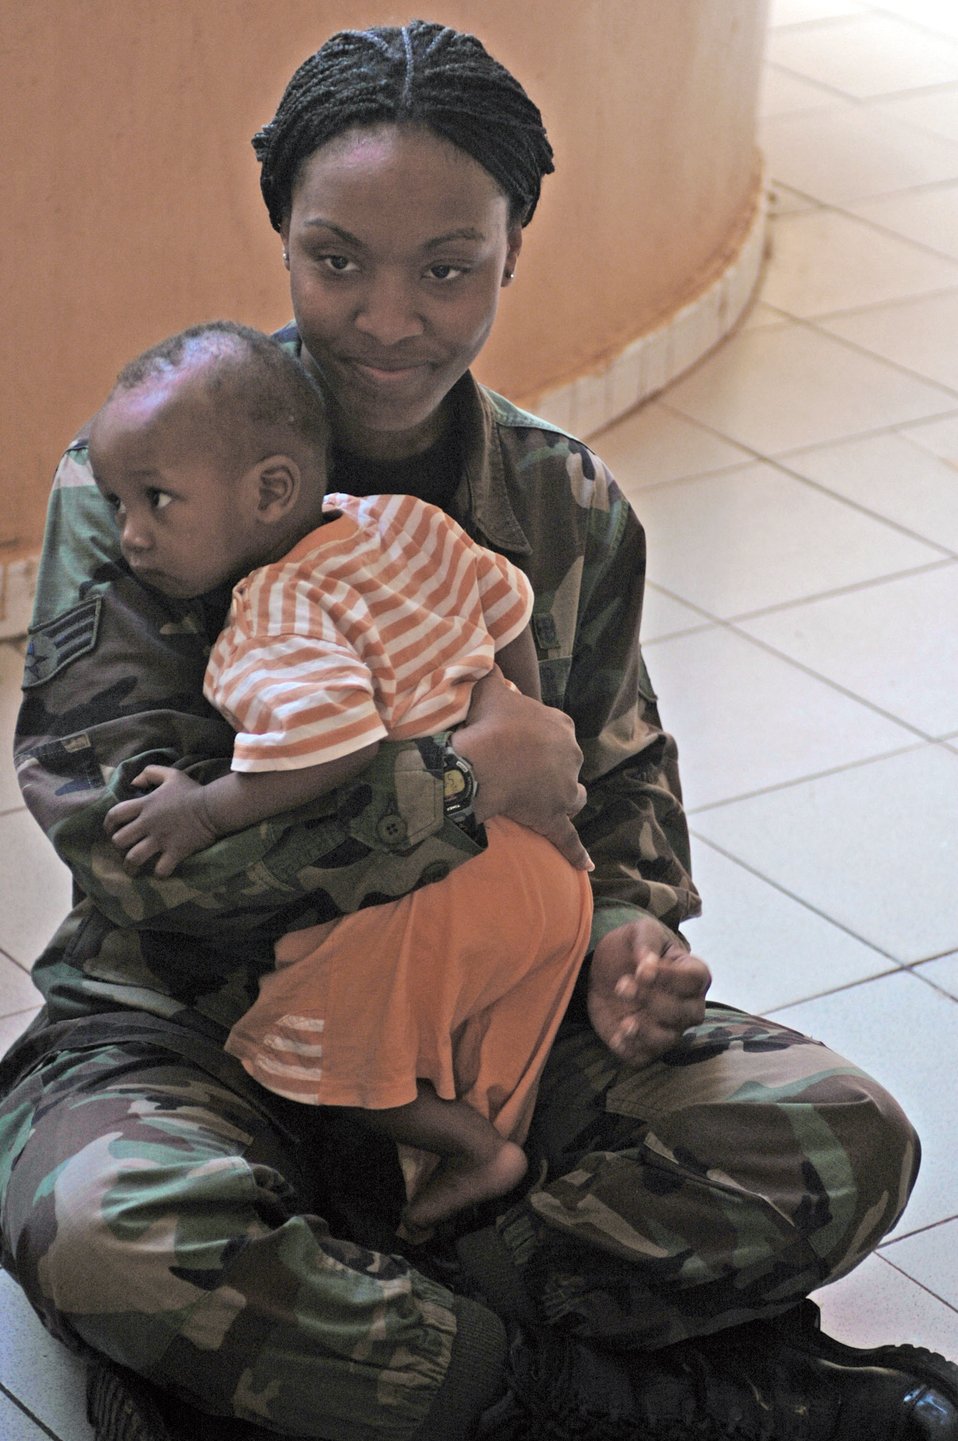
Airmen donate clothes to Malians

Senior Airman Latrisha Peebles holds a Malian baby July 16 at a local orphanage in Bamako. Airman Peebles is one of more than 90 servicemembers deployed to Bamako for MEDFLAG 08, a multi-national medical training exercise designed to enhance medical capabilities and readiness for U.S. and African forces. She is assigned to the 31st Medical Group, Aviano Air Base, Italy.